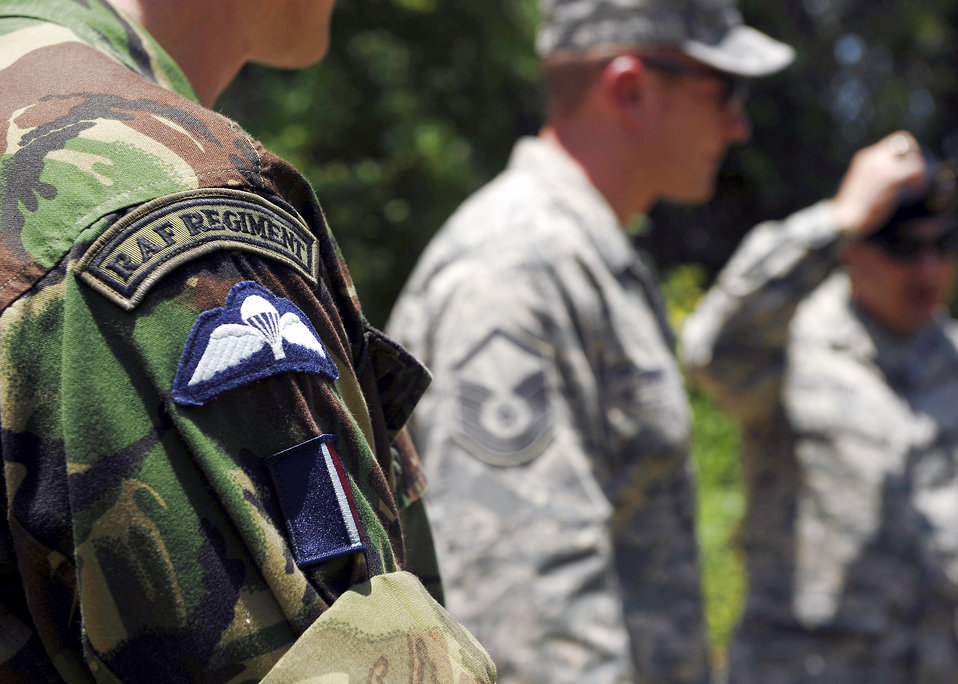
RAF officers spin-up on 820th SFG roles, mission, training

Royal Air Force Flight Lt. Dave Martin, RAF Honington Force Protection Centre, stands near Master Sgt. Jason France during a tour at Moody Air Force Base, Ga., May 20. The RAF officers visited Moody to learn about the 820th SFG's unique mission and share information. Sergeant France is the 820th Security Forces Group operations superintendent.